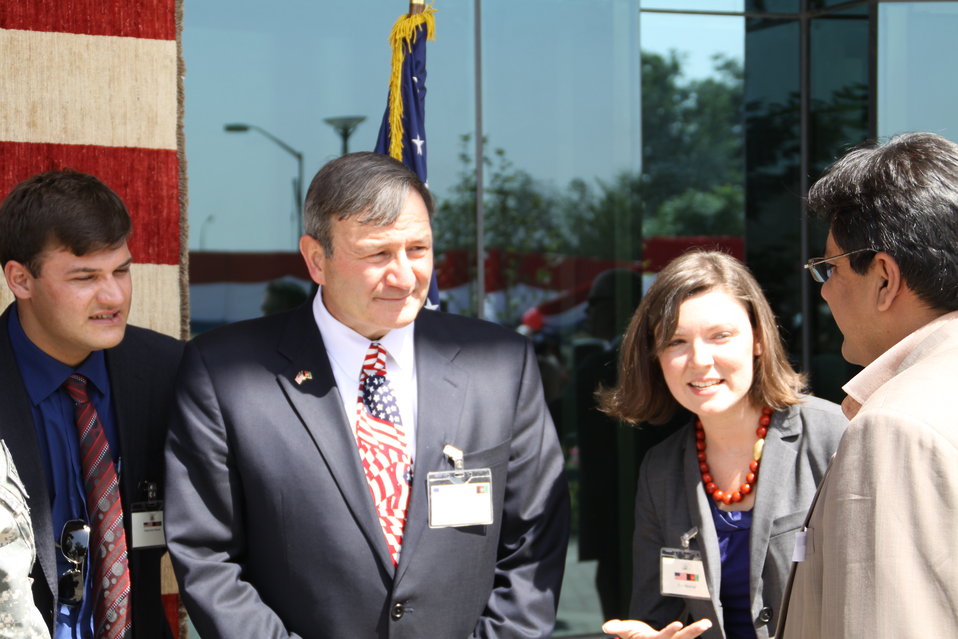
Kabul Official July 4th Celebration